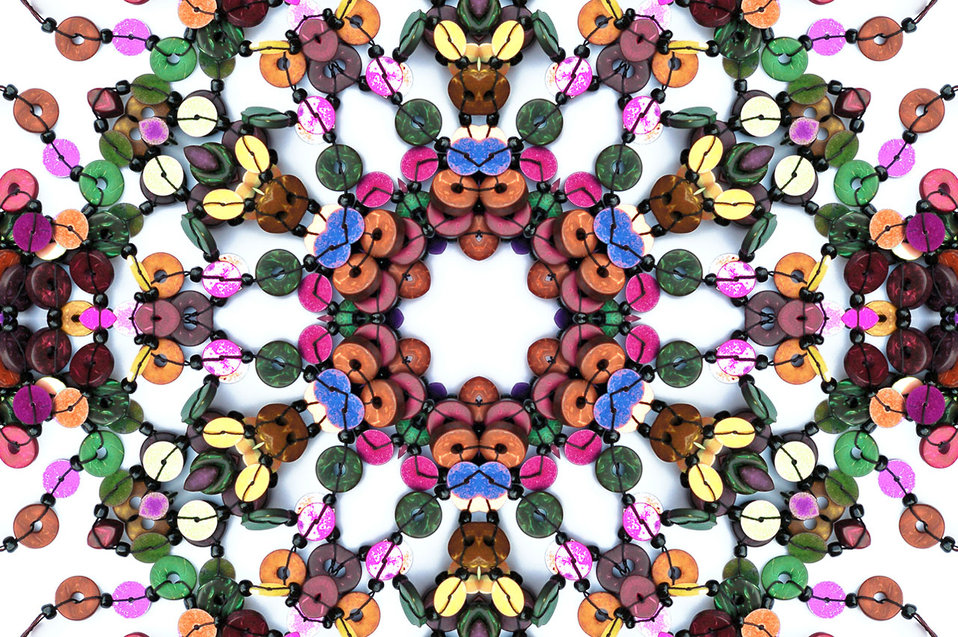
Wooden beads

Background with colourful wooden beads.